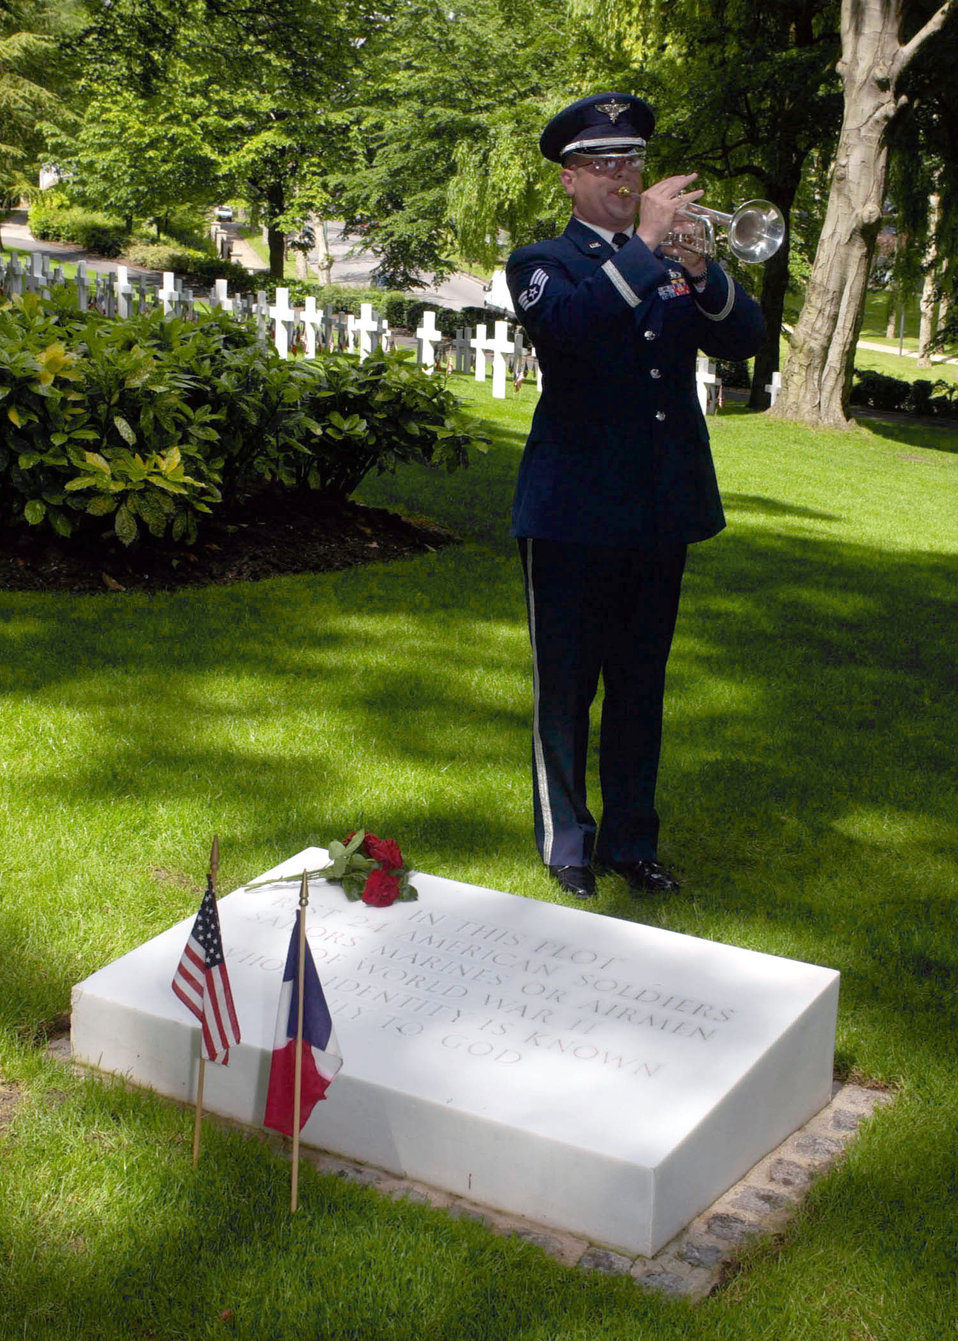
Taps

SURESNES, France -- Taps is played by Staff Sgt. Joe Grasso during Memorial Day ceremonies at the Suresnes American Cemetary, Hauts-de-Seine near Paris. Grasso is a member of the United States Air Forces in Europe Band.